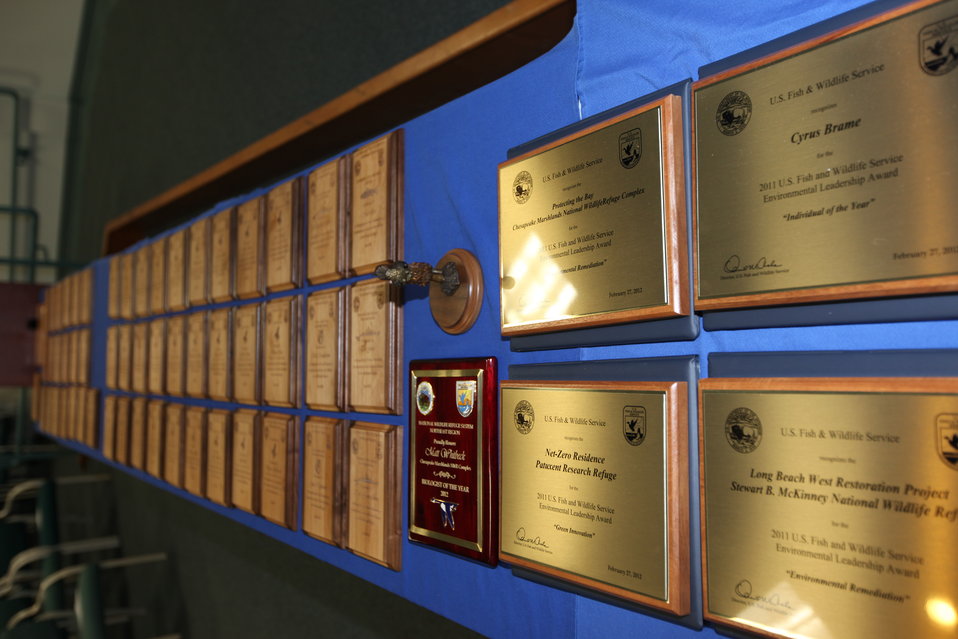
Northeast Region Employee Appreciation Awards